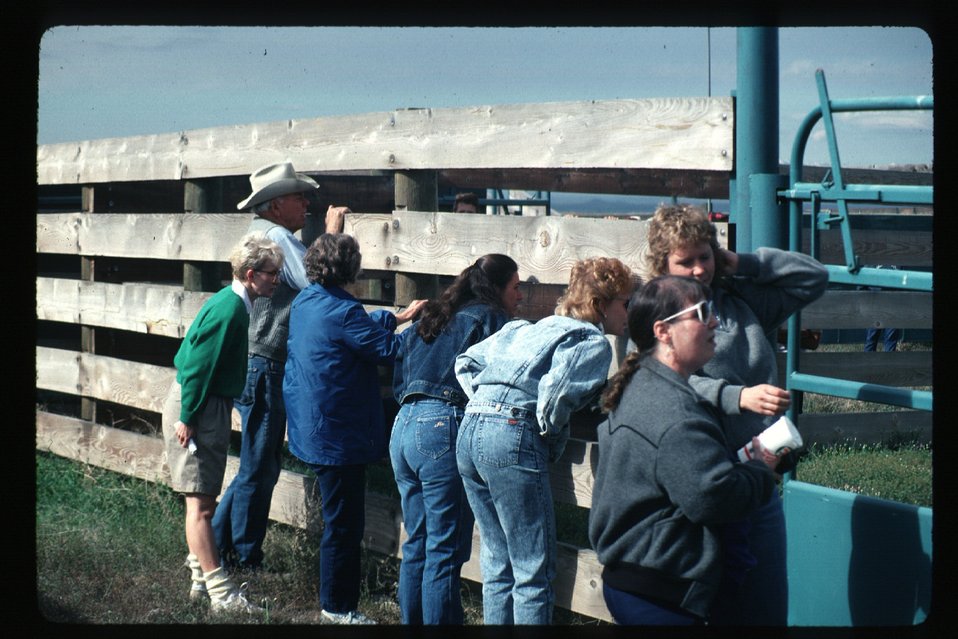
Wild horse adoption Wild Horse and Burro Adoption Program LSRD Lower Snake River District